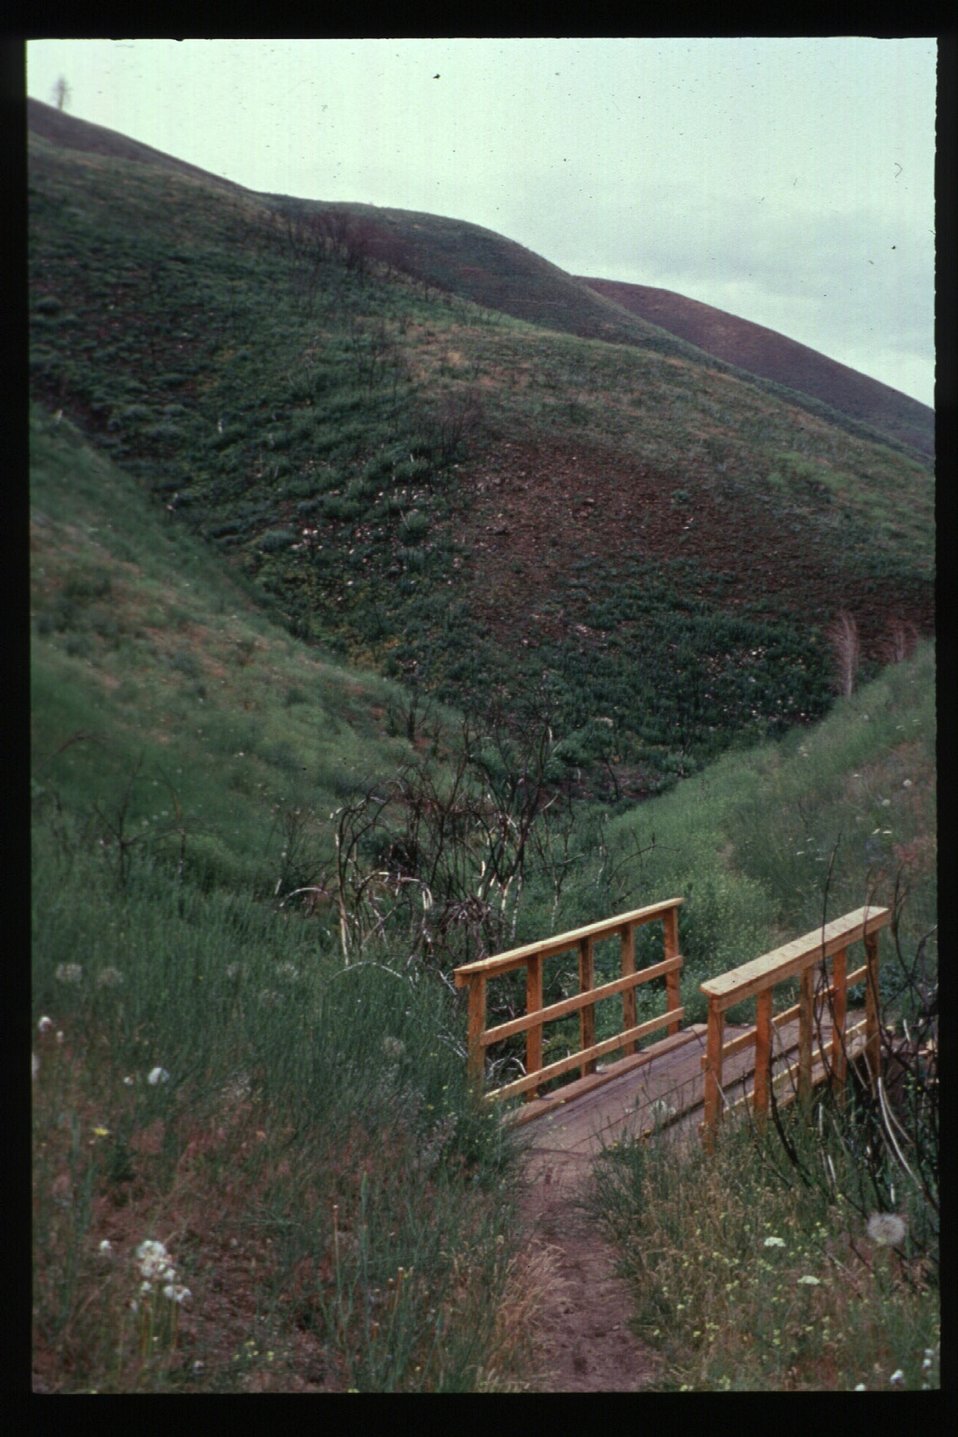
8th Street Fire Four Rivers Field Office LSRD Lower Snake River District